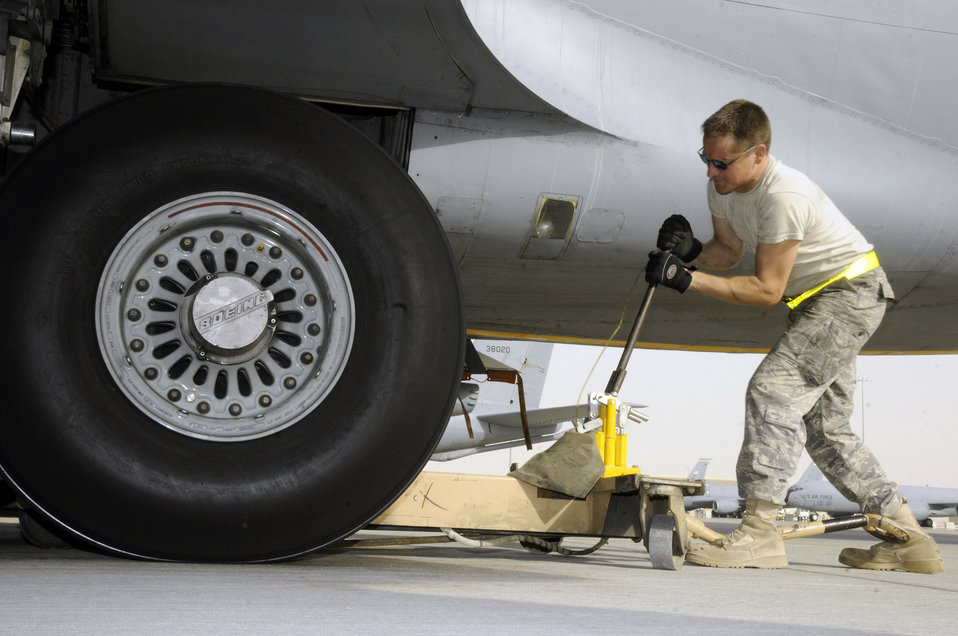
Brake it down

Tech. Sgt. Chris Reiter cranks on a jack lifting more than 300,000 pounds of a KC-135 Stratotanker Sept. 28 at an air base in Southwest Asia. The tire needed to be removed and the brake unit replaced after a crack in the heat shield was detected during a post-flight inspection. Sergeant Reiter is assigned to the 340th Aircraft Maintenance Unit. He is a native of Farmington, N.M., is deployed from Fairchild Air Force Base, Wash.